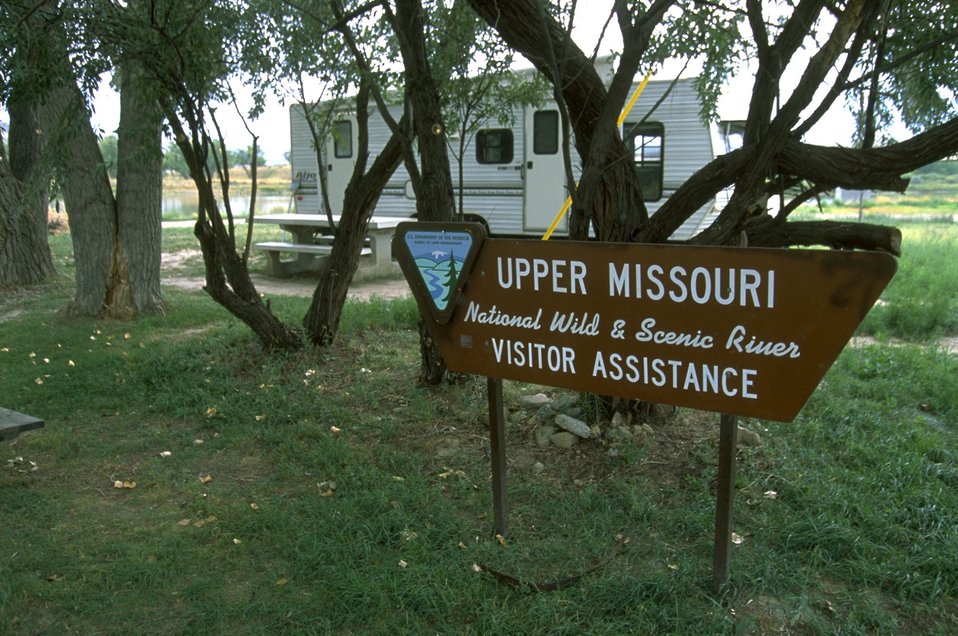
Sign at Judith Landing